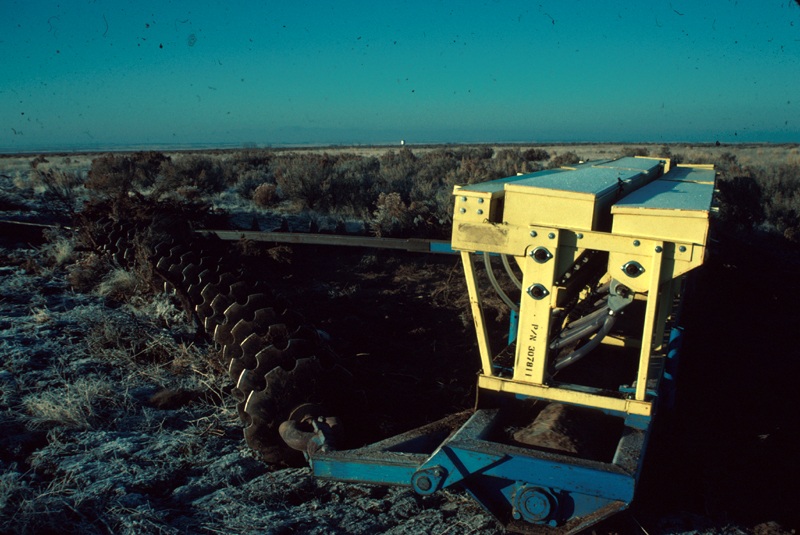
Owyhee Range Restoration Project Lower Snake River District